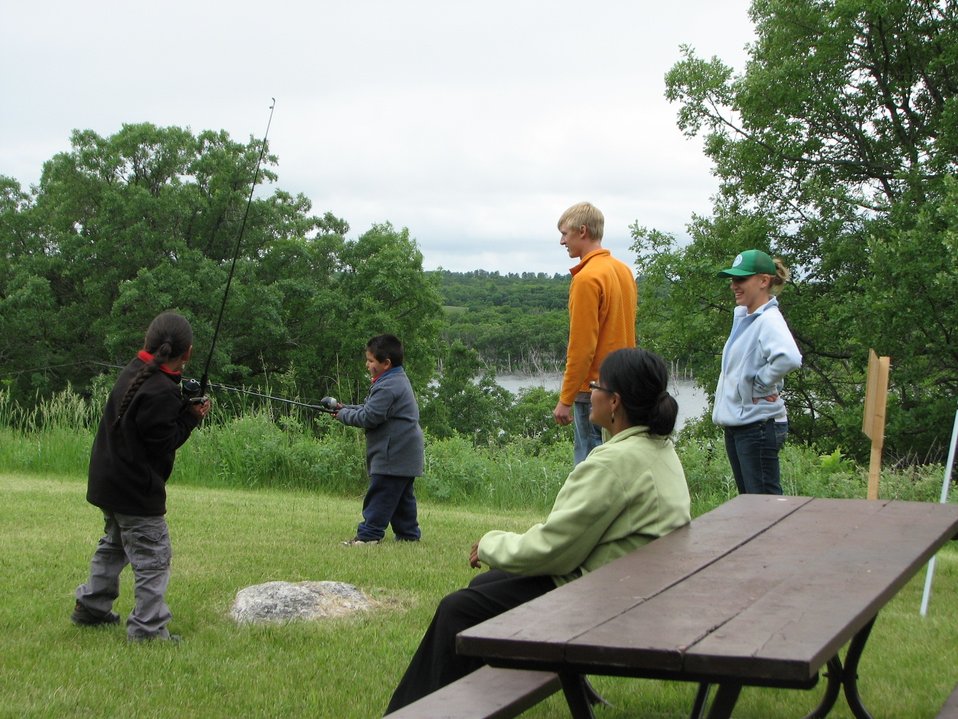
Learning to Cast

FWS staff teach youth how to spin cast during the 2010 Sullys Hill Birding and Nature Festival.